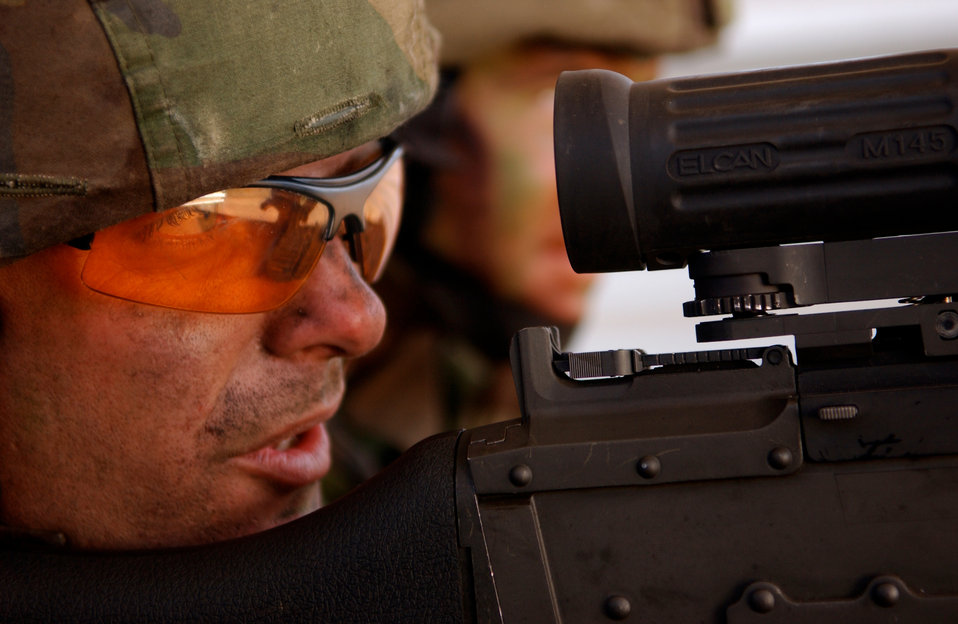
Defender Challenge 2004

FORT HUACHUCA, Ariz. -- Senior Airman Robert Crenshaw fires the M-240B machine gun machine gun during an exercise here recently. Members of the U.S. Air Forces in Europe Defender Challenge team are spending three weeks here in preparation for the 2004 Defender Challenge competition. Defender Challenge held at Lackland Air Force Base, Texas, is a security forces competition pitting competitors from major commands against one another. Airman Crenshaw is assigned to the 48th Security Forces Squadron at Royal Air Force Lakenheath, England.